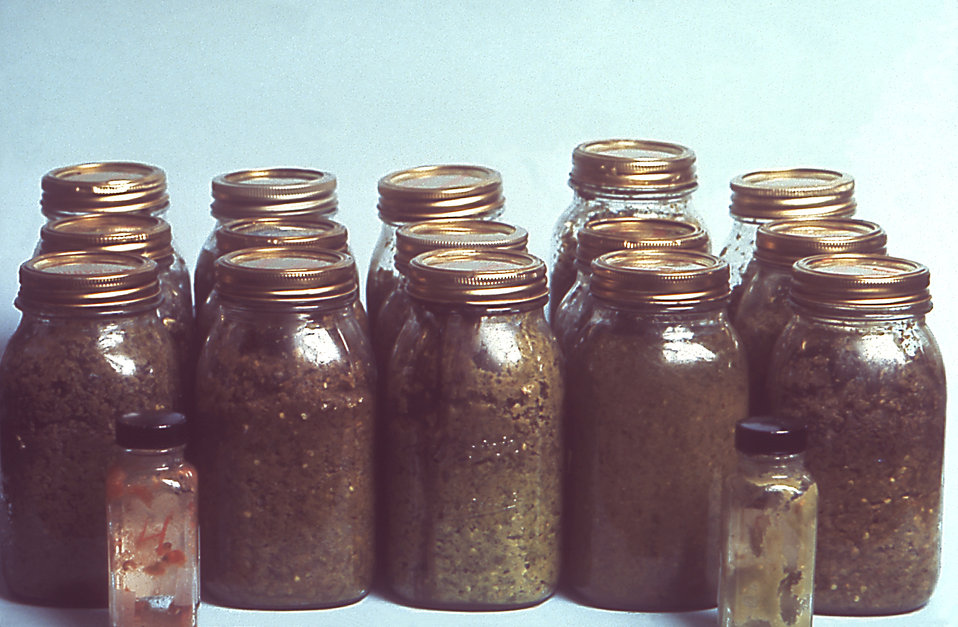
These were jars of contaminated Jalape�eppers involved in an outbreak of botulism in Pontiac, Michigan, April, 1977.